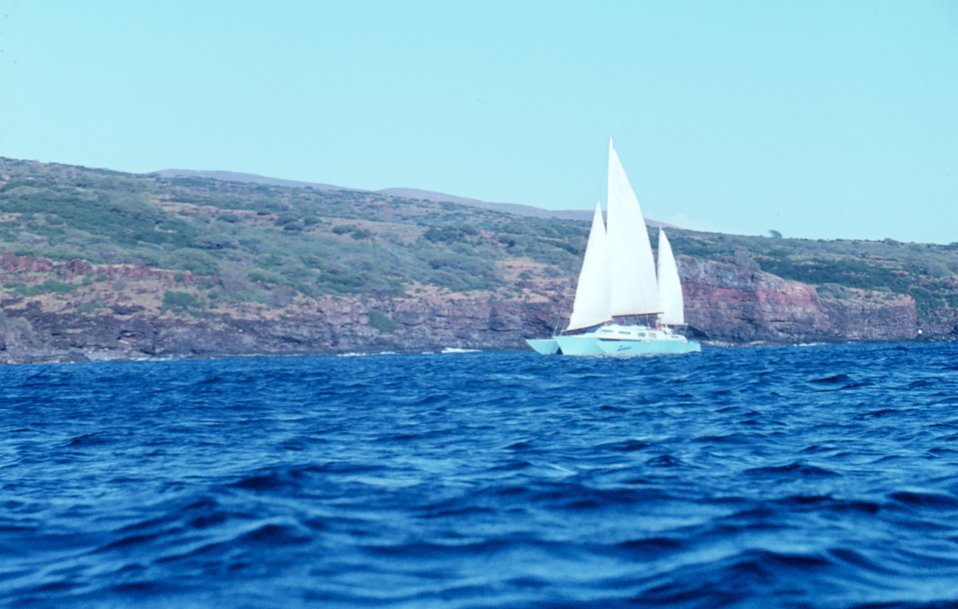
Catamaran sailing off Hawaiian island